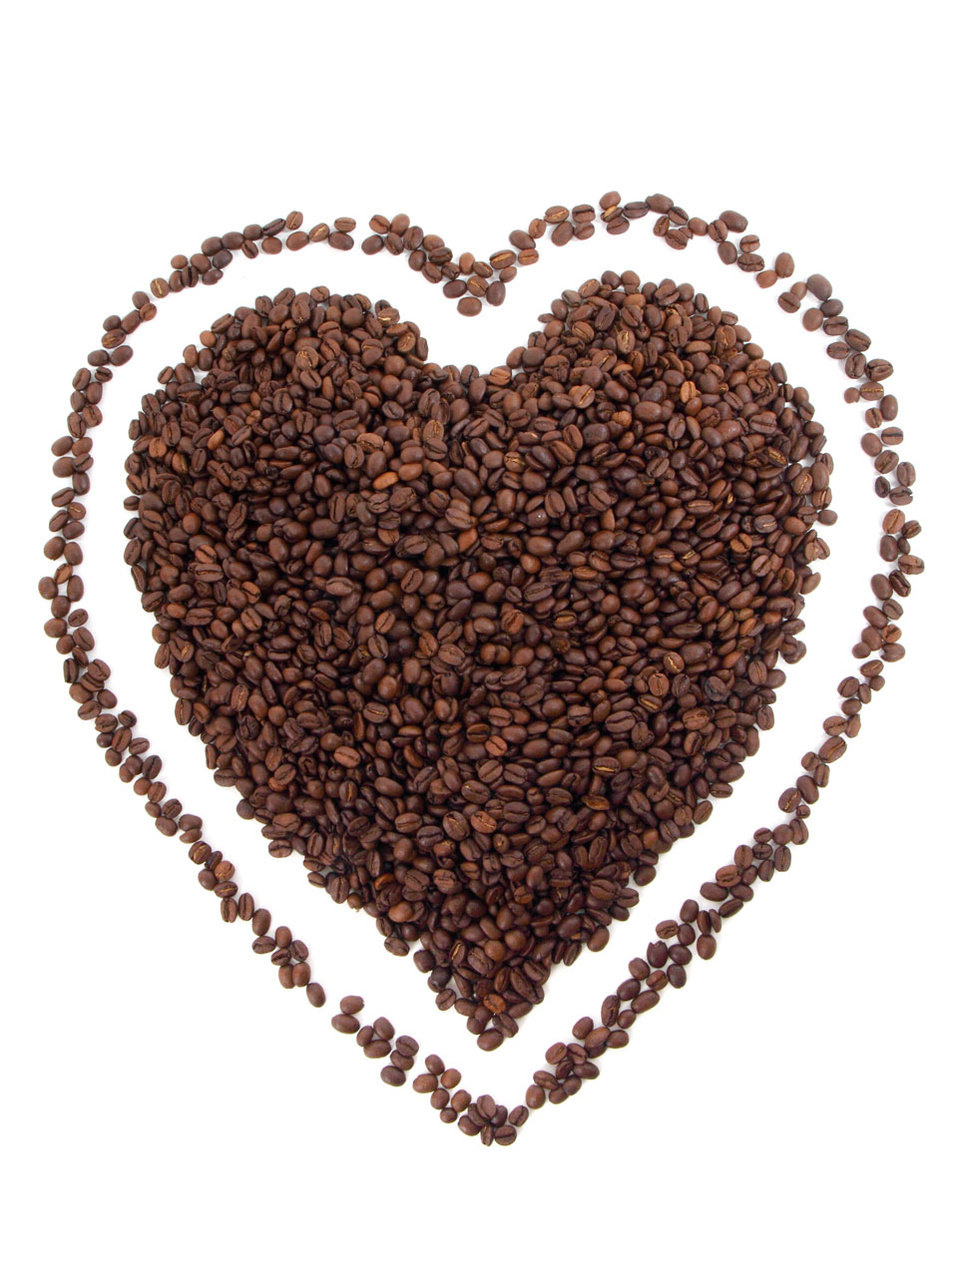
Love coffee

Heart shape made with coffee beans isolated on white background.